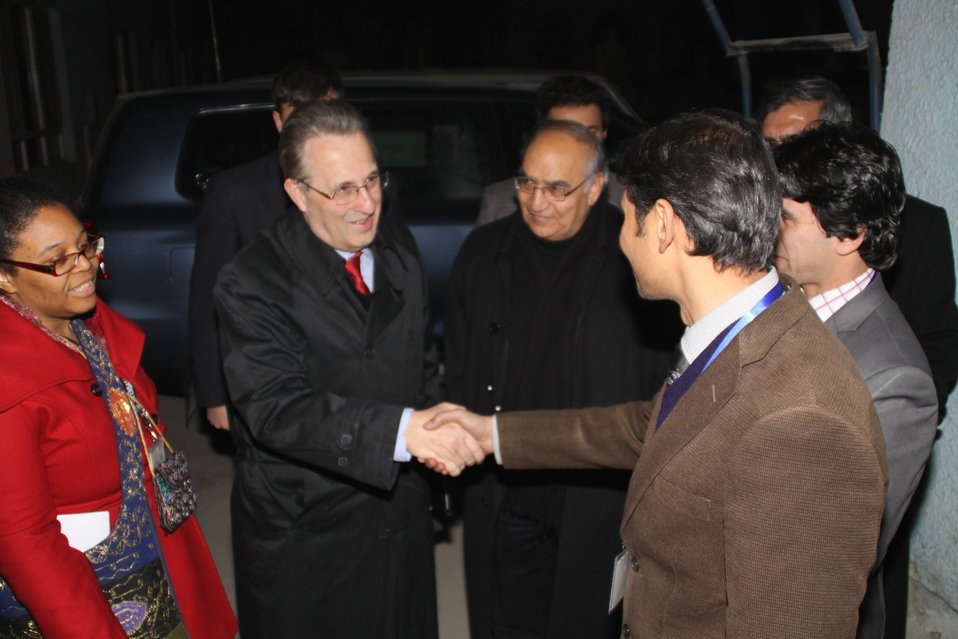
U.S. Ambassador E. Anthony Waynevvvvvvv